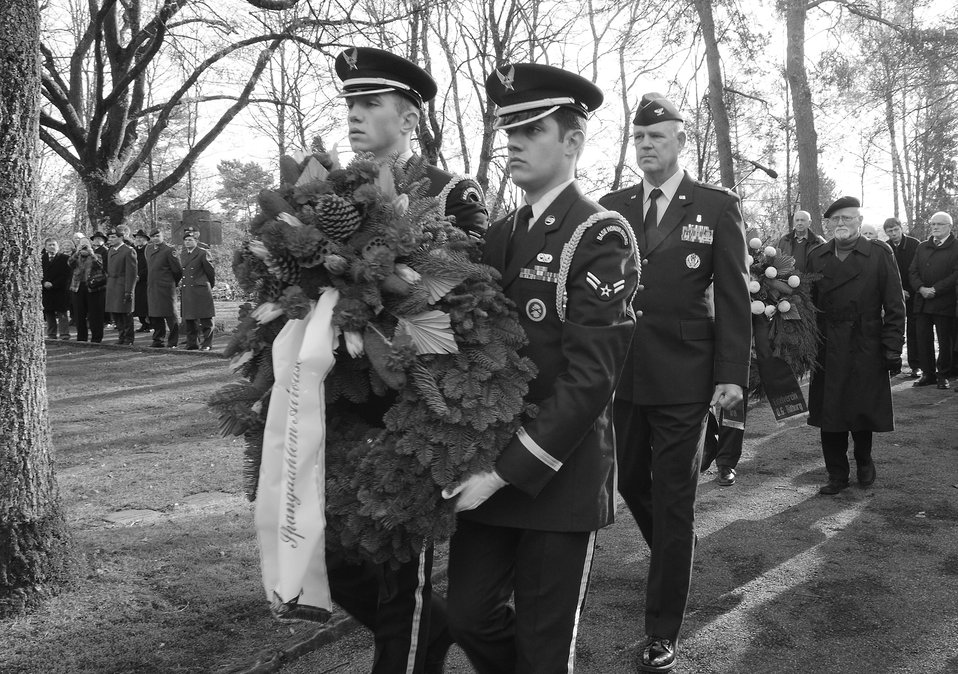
National Day of Mourning

Air Force Honor Guard members carry a wreath followed by Col. Robert Bowersox during a ceremony for Volkstrauertag, or German National Day of Mourning, Nov. 11, 2010, at Bitburg, Germany. German and American servicemembers as well as firefighters, police and government officials from the local area participated in the ceremony to remember victims of war and tyranny. The honor guard and Colonel Bowersox, who is the 52nd Medical Group commander, are stationed at nearby Spangdahlem Air Base.